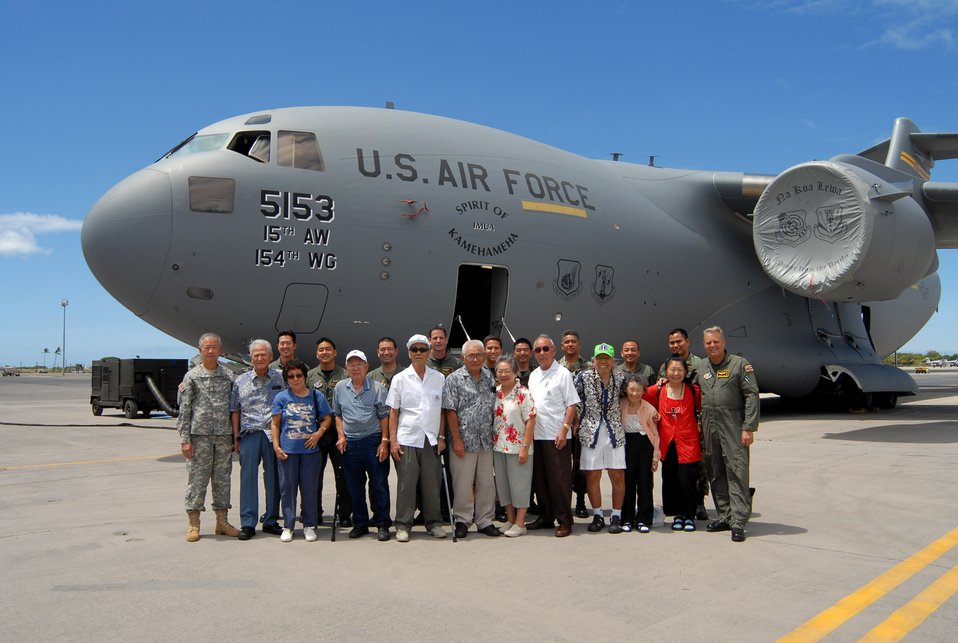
WWII veterans tour Hickam

World War II veterans who served in the 100th Infantry Battalion toured a C-17 Globemaster III June 25 at Hickam Air Force Base, Hawaii. Airmen from the Hawaii Air National Guard's 154th Wing hosted the tour.